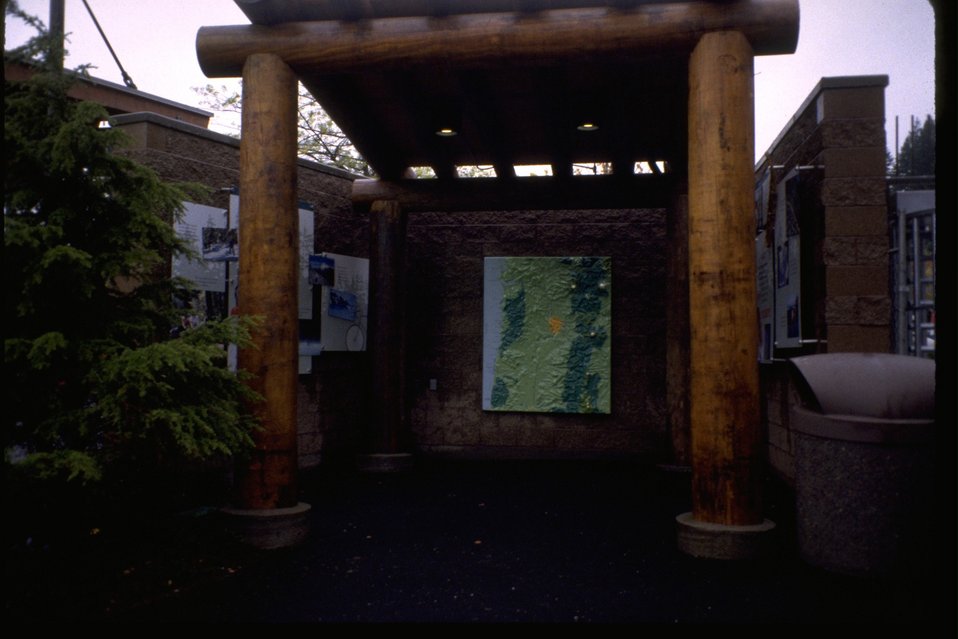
Display of interagency public lands tactile model at the Oregon Zoo.